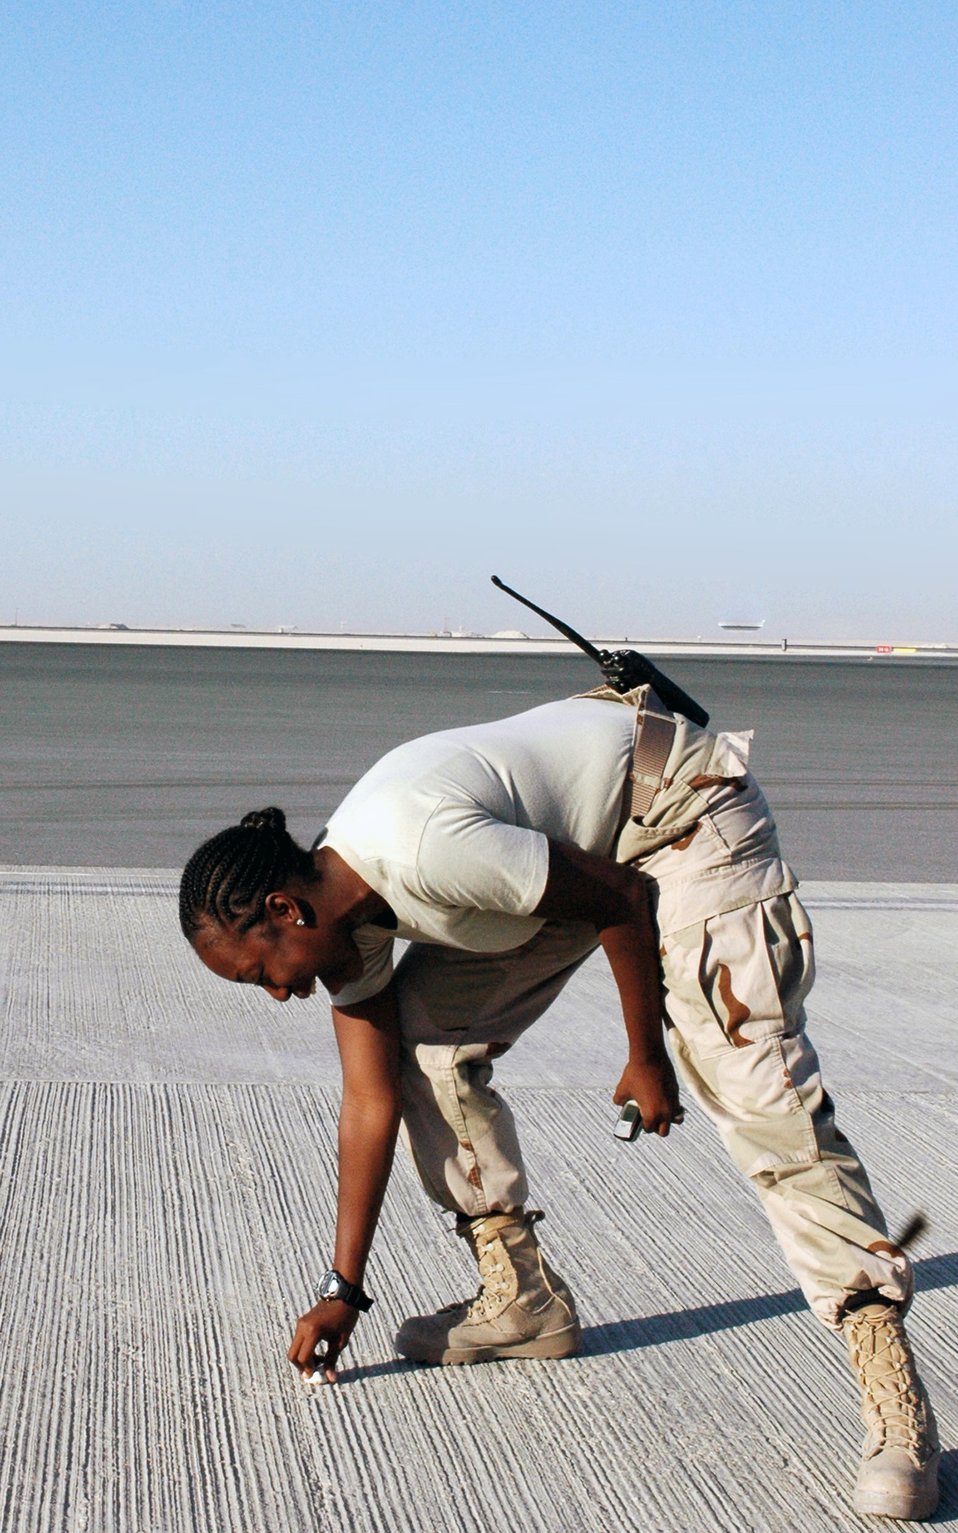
379th Airfield Management keeps aircraft, personnel safe

Senior Airman RayShauna Grooms removes foreign object debris from the airfield. Removing FOD from the airfield can prevent serious damage to aircraft engines. Airman Grooms is an airfield management operations supervisor assigned to the 379th Expeditionary Operations Support Squadron and deployed from Holloman Air Force Base, N.M.